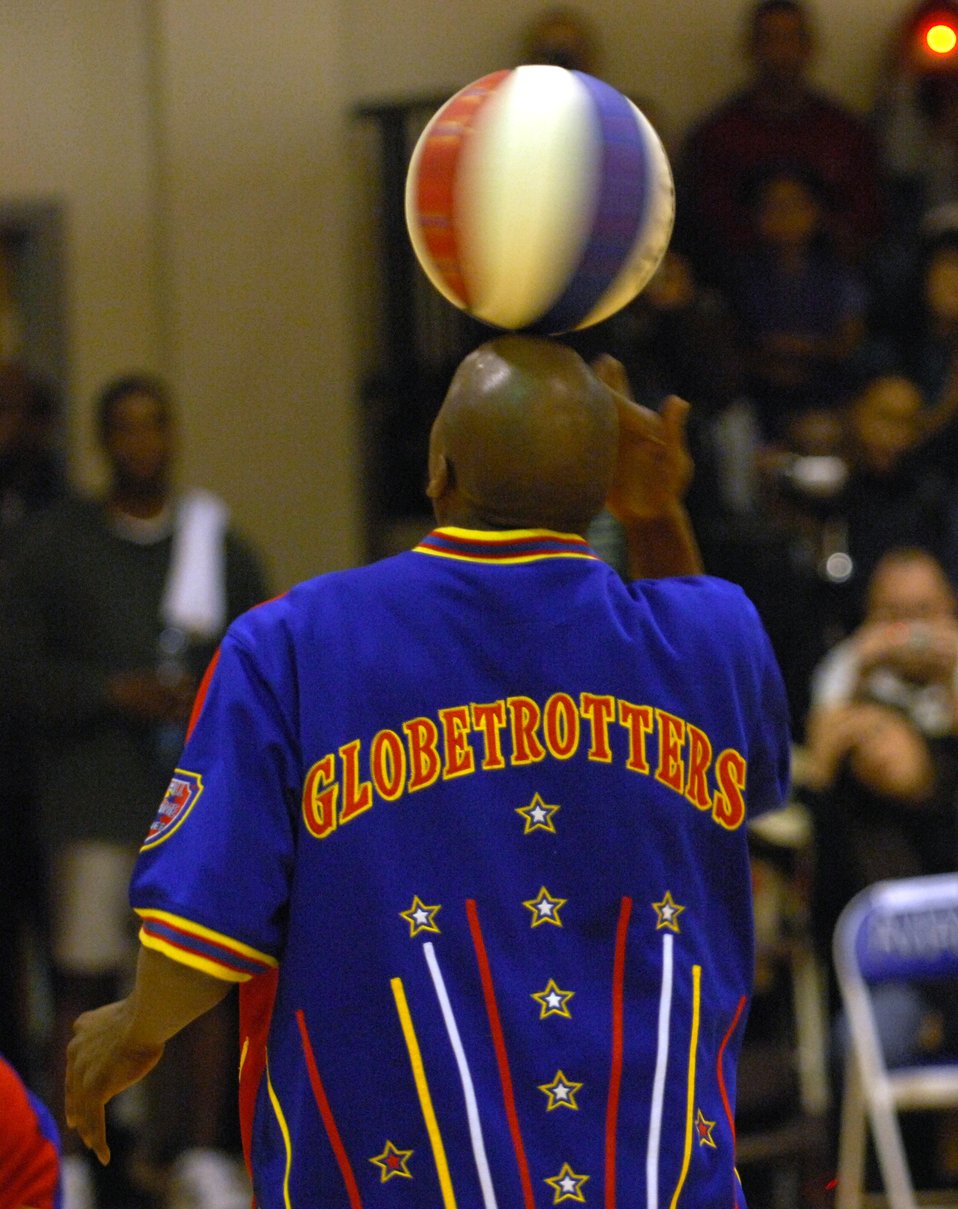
Harlem Globetrotters share the magic

The Harlem Globetrotters show off their basketball handling skills before a game Dec. 1 at the Dragon Fitness Center at Aviano Air Base, Italy. The Harlem Globetrotters are touring Army and Air Force installations throughout Europe as part of their